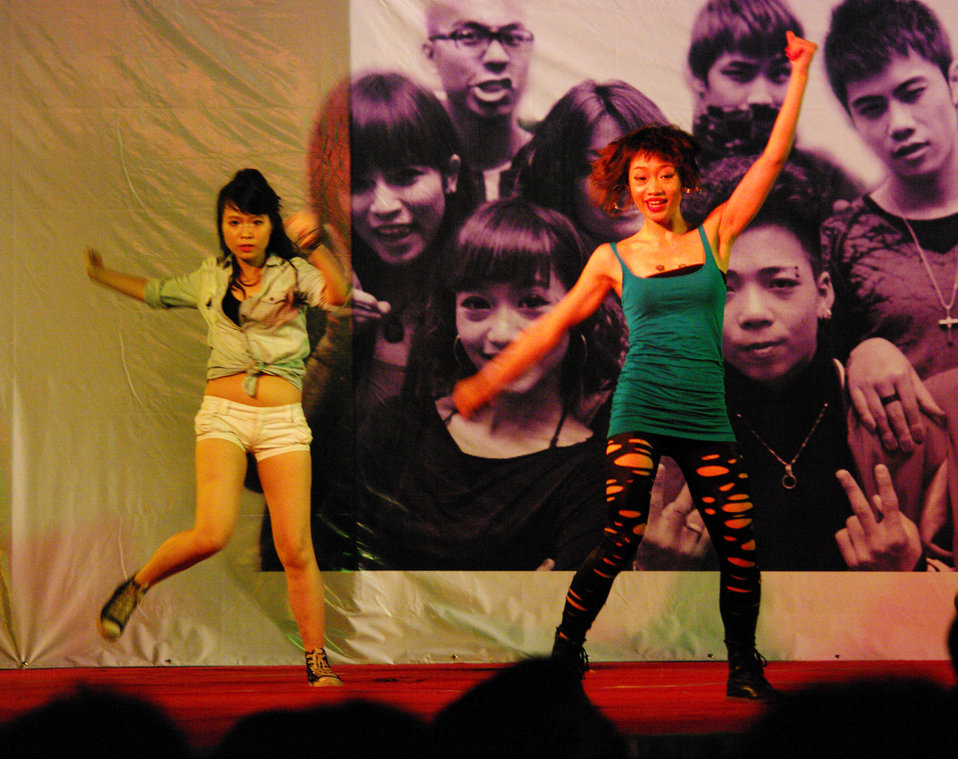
PEPFAR Sponsors Hip Hop to Stop the Spread of HIV